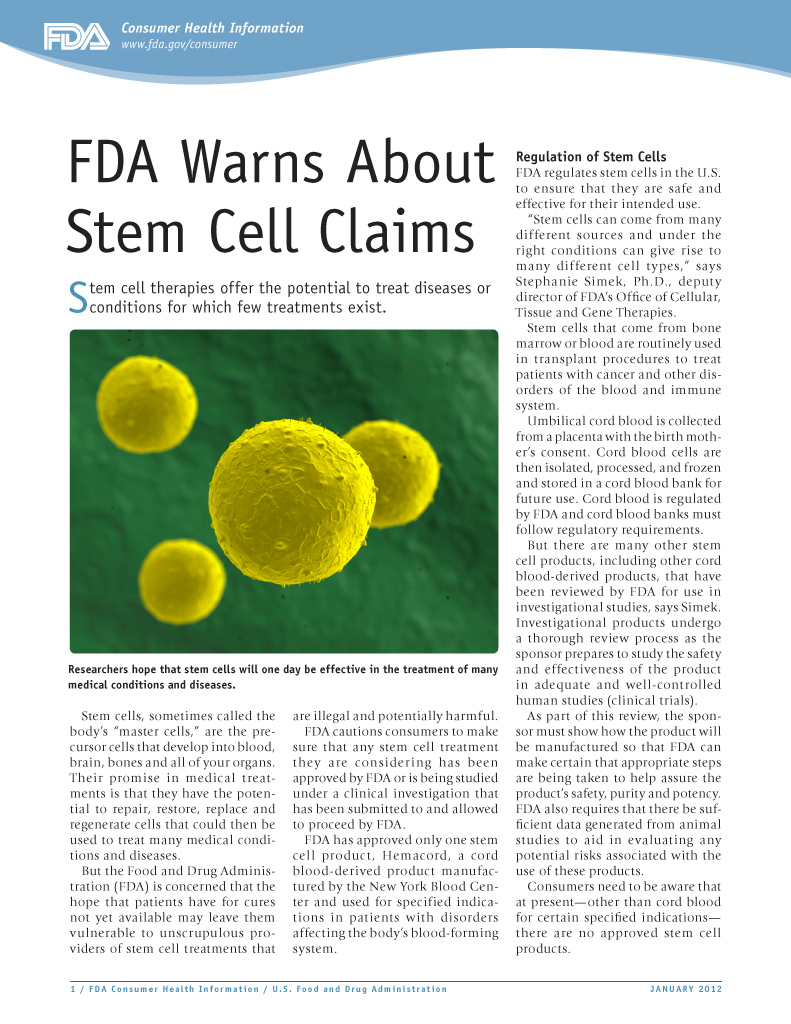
FDA Warns About Stem Cell Claims

Don't be fooled by unscrupulous people who offer hope through unapproved stem cell therapies for diseases or conditions for which few treatments exist. Read this FDA Consumer Update: www.fda.gov/ForConsumers/ConsumerUpdates/ucm286155.htm

Consumer Updates are a quick and easy way to pick up important health information for you and your family. For a complete list of Consumer Updates see the Consumer Updates photo set: www.flickr.com/photos/fdaphotos/sets/72157624900896241/.

For the latest Consumer Updates go to: www.fda.gov/forconsumers/consumerupdates